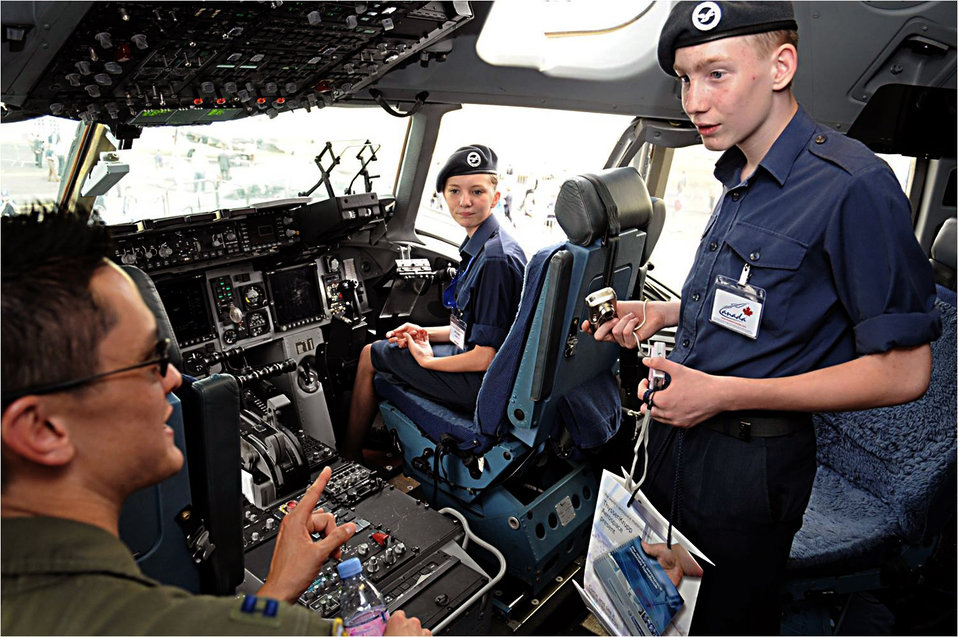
Farnborough 2010

Capt. Gordon Roman (left) explains cockpit controls to British cadets July 20, 2010, in Farnborough, England. Eleven U.S. military aircraft and approximately 70 personnel representing all branches of service participate in the 2010 Farnborough International Air Show. Captain Roman is a C-17 Globemaster III pilot from Travis Air Force Base, Calif.